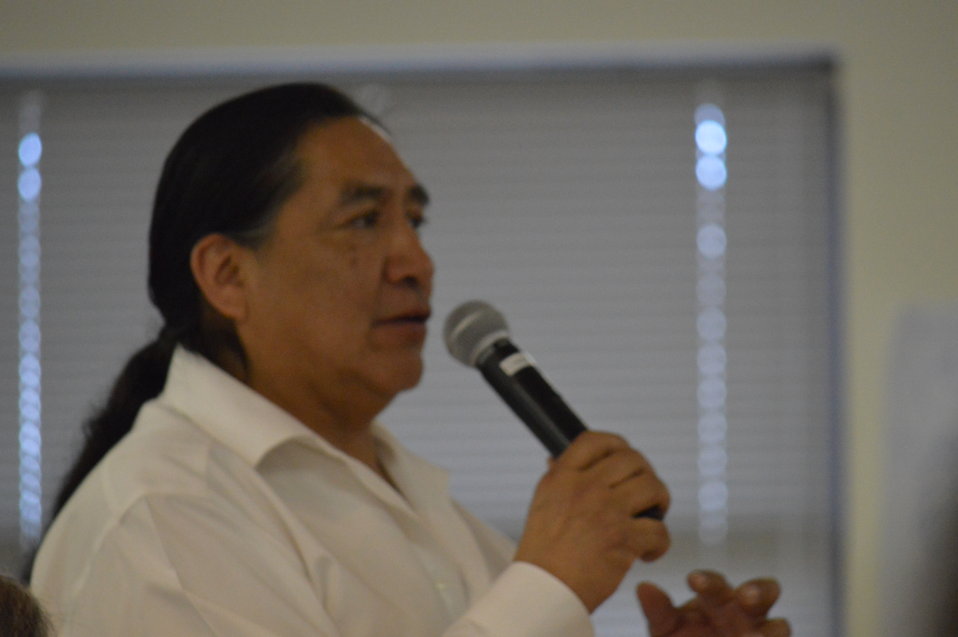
Eagle Summit III

Questions and comments during the consultation at the Eagle Summit III in Denver, Colorado on March 20, 2014 at the Rocky Mountain Arsenal National Wildlife Refuge.